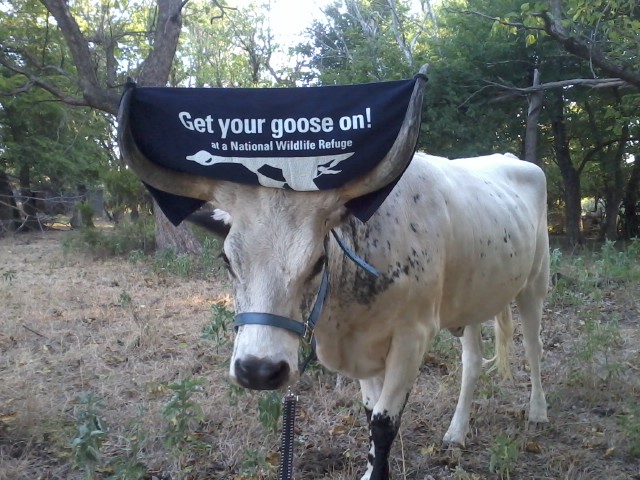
Get Your Goose On!

Wichita Mountains National Wildlife Refuge in Oklahoma.